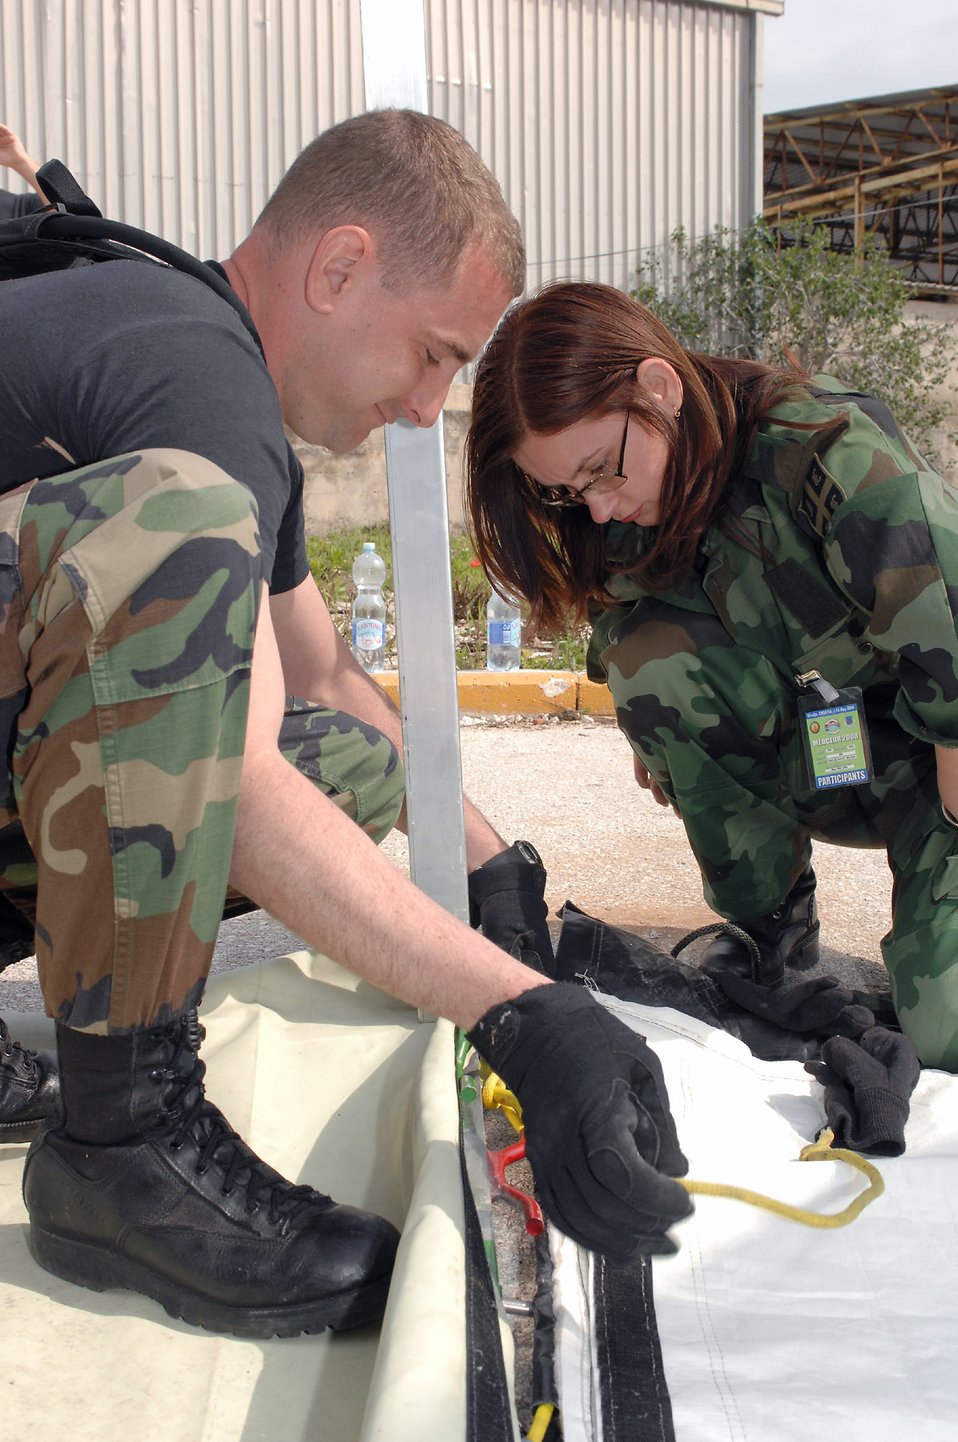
Knot typical training

Staff Sgt. Brian Schmit demonstrates knot tying techniques on an expeditionary medical squadron tent for Serbian army medical civilian Jelena Andjelkovic during the 2008 Medical Training Exercise in Central and Eastern Europe May 5 at Dijulje Training Base, Croatia. The training is one of 11 courses offered during the exercise. Fifteen nations are participating in the exercise from May 2 through 14. The exercise focuses on mass-casualty training scenarios and humanitarian aid in response to crises situations, and a Joint Chiefs of Staff regional/multilateral exercise sponsored by U.S. European Command. Croatia officials are hosting the 2008 exercise, which drew about 400 multinationals in support of the Partnership for Peace initiative. Sergeant Schmit is assigned to the 458th Expeditionary Medical Squadron.